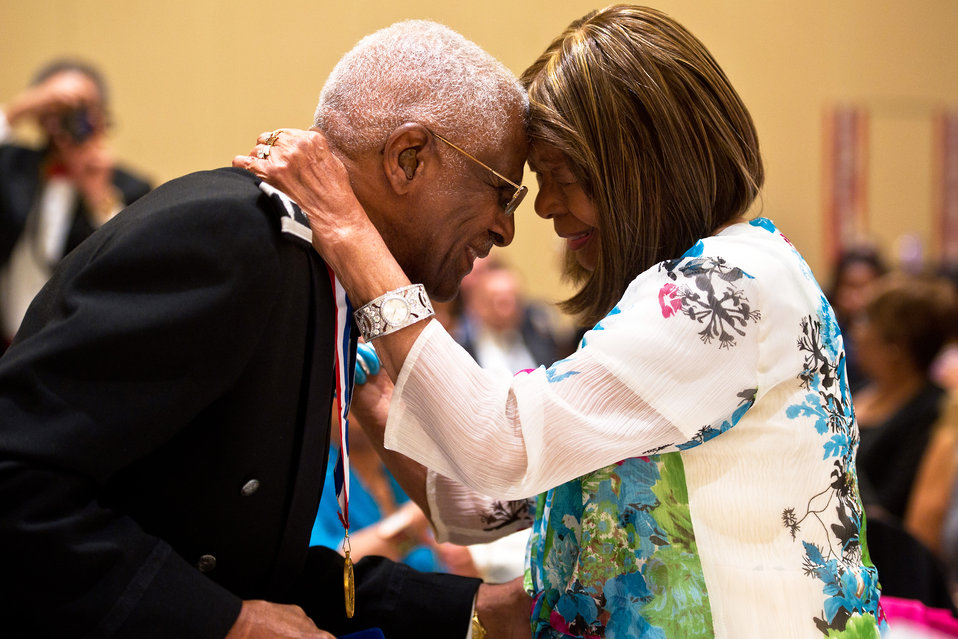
40th Tuskegee National Convention

Pearlie Harvey, right, congratulates her husband, Ret. Lt. Col. James Harvey, left, at the Gala Dinner for the Tuskegee Airmen 40th National Convention, August 6, 2011, at the Gaylord National Hotel, Md. Colonel Harvey received the Noel F. Parrish Award, the Tuskegee Airmen Inc., highest of honor. This award recognizes outstanding endeavors to enhance access to knowledge, skills, and opportunities.